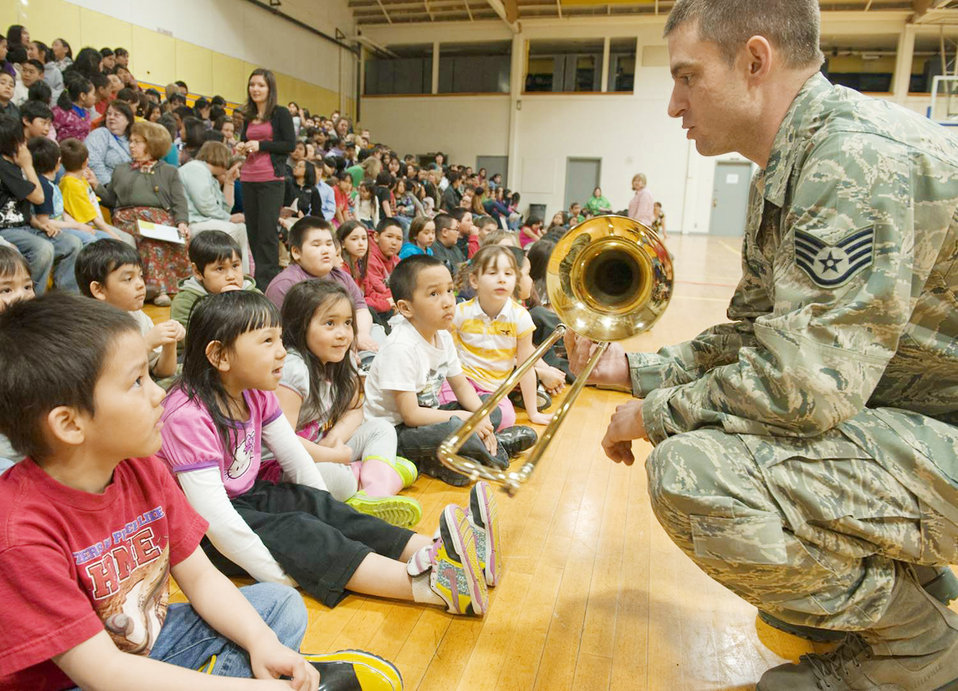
Northern Lights entertain native Alaskans during Operation Artic Care

A musician from the Pacific Air Forces Northern Lights brass ensemble speaks with Kotzebue elementary students during Operation Artic Care about his trombone April 20, 2010, in Kotzebue, Alaska.